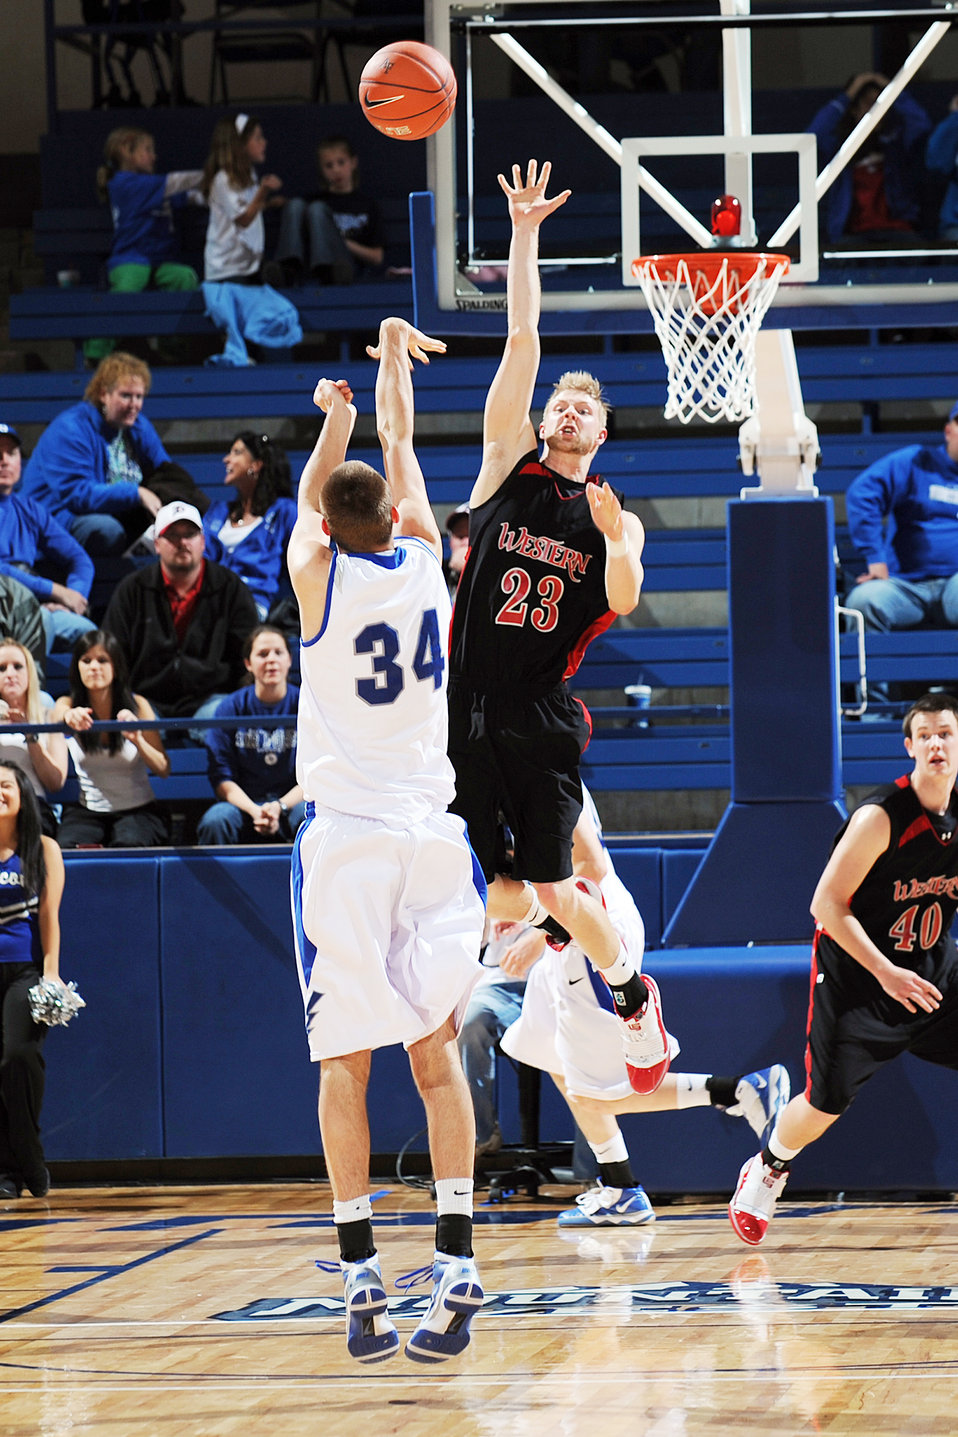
Falcons reign supreme in season opener

Western State defender Dan Hobin attempts to block a 3-pointer shot by U.S. Air Force Academy Falcon freshman Taylor Broekhuis Nov. 13, 2009 in Clune Arena at the Academy near Colorado Springs, Colo.